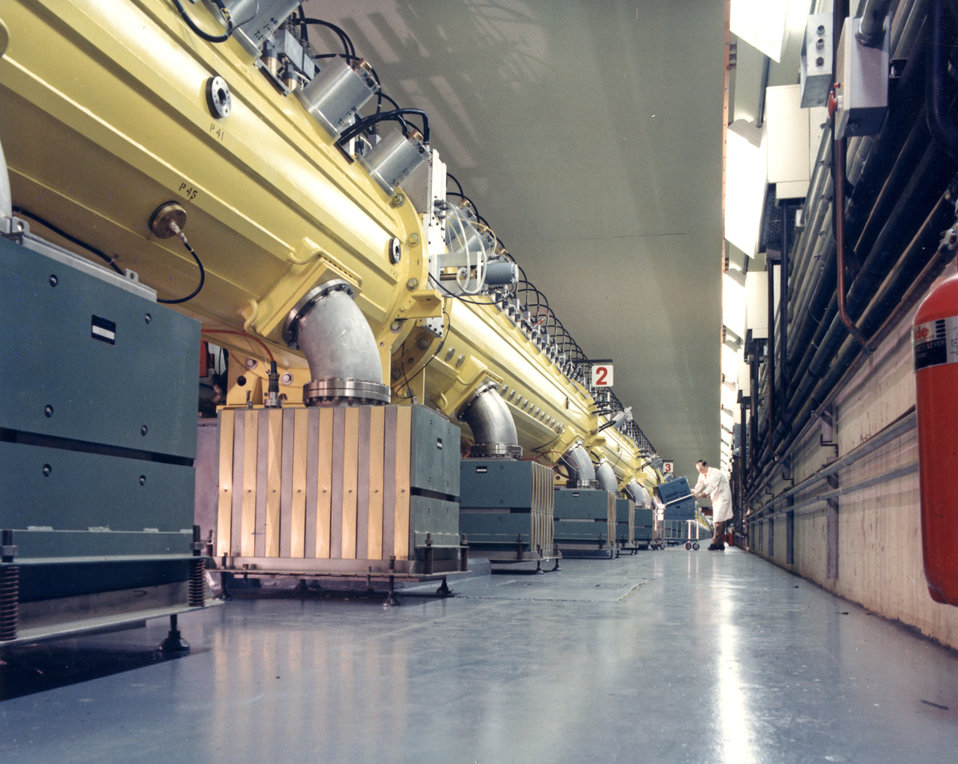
Brookhaven National Laboratory Linear Accelerator (LINAC) was designed and built in the late 1960's as a major upgrade to the Alternating Gradient Synchrotron (AGS) complex.

Its purpose is to provide accelerated protons for use at AGS facilities and the Brookhaven Linac Isotope Producer (BLIP). The Linac is capable of producing up to a 35 milliampere proton beam at energies up to 200 million electron-volts (MeV) for injection into the AGS Booster or for the activation of targets at the BLIP.